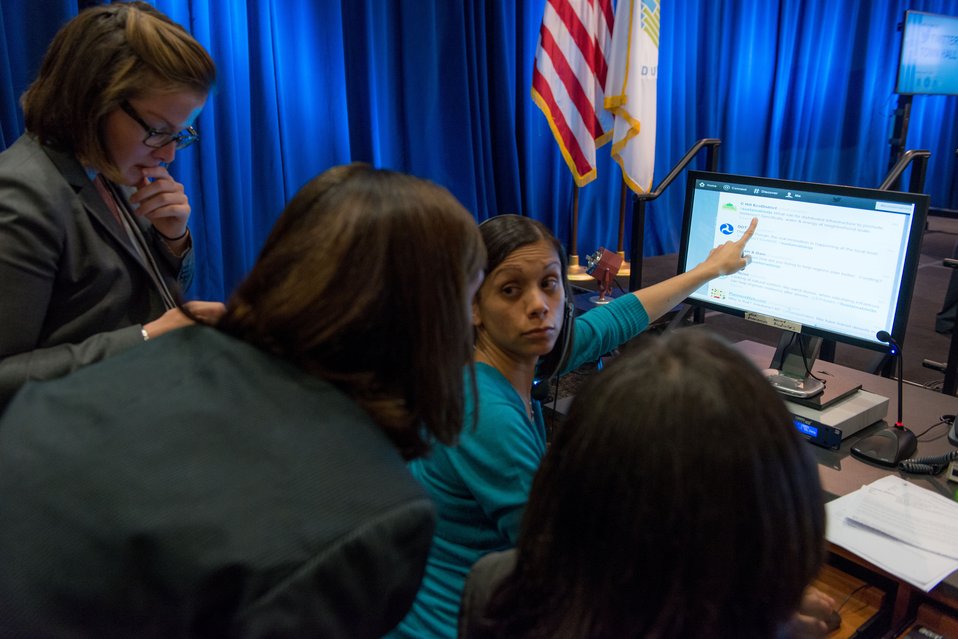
EPA, HUD, and DOT Staff at the Twitter Town Hall

Questions asked on Twitter were fielded live and answered by the town hall panelists.
USEPA Photo by Eric Vance. Public domain image